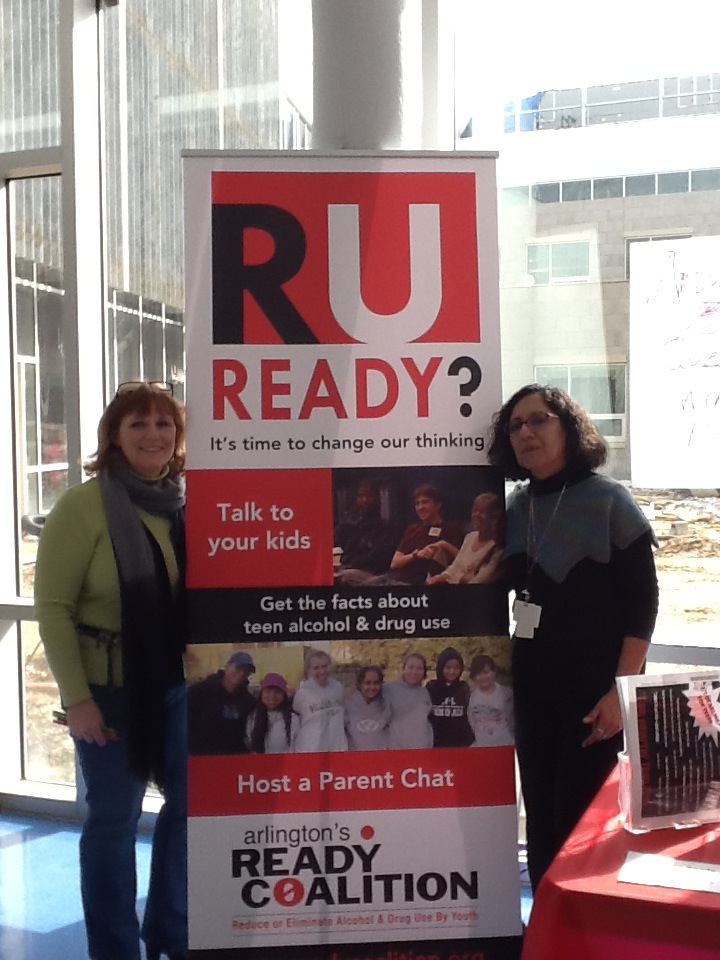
RU Ready? NDFW 2013

Arlington, Va. Ready Coalition (Reduce or eliminate alcohol and drug use among youth) representative Kate McCauley. and Mila Vascones-Gatski, substance abuse counselor Yorktown High School.